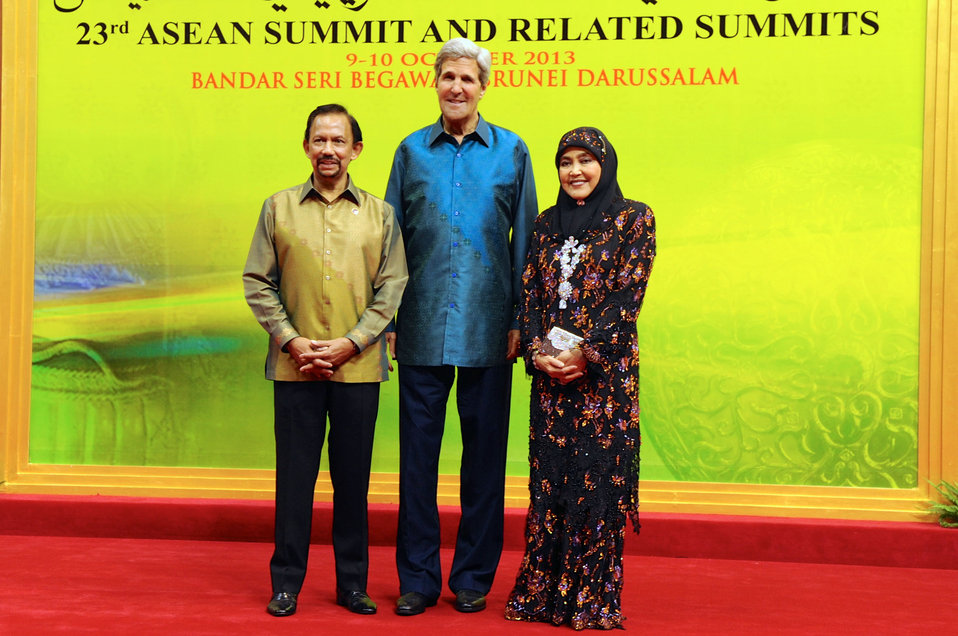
Secretary Kerry Poses for a Photo With Sultan Bolkiah of Brunei and His Wife, Hajah Saleha

U.S. Secretary of State John Kerry poses with Sultan Haji Hassanal Bolkiah of Brunei and his wife, Hajah Saleha, before before the start of a dinner and cultural program at the ASEAN Summit meeting in Bandar Seri Begawan, Brunei, on October 9, 2013.